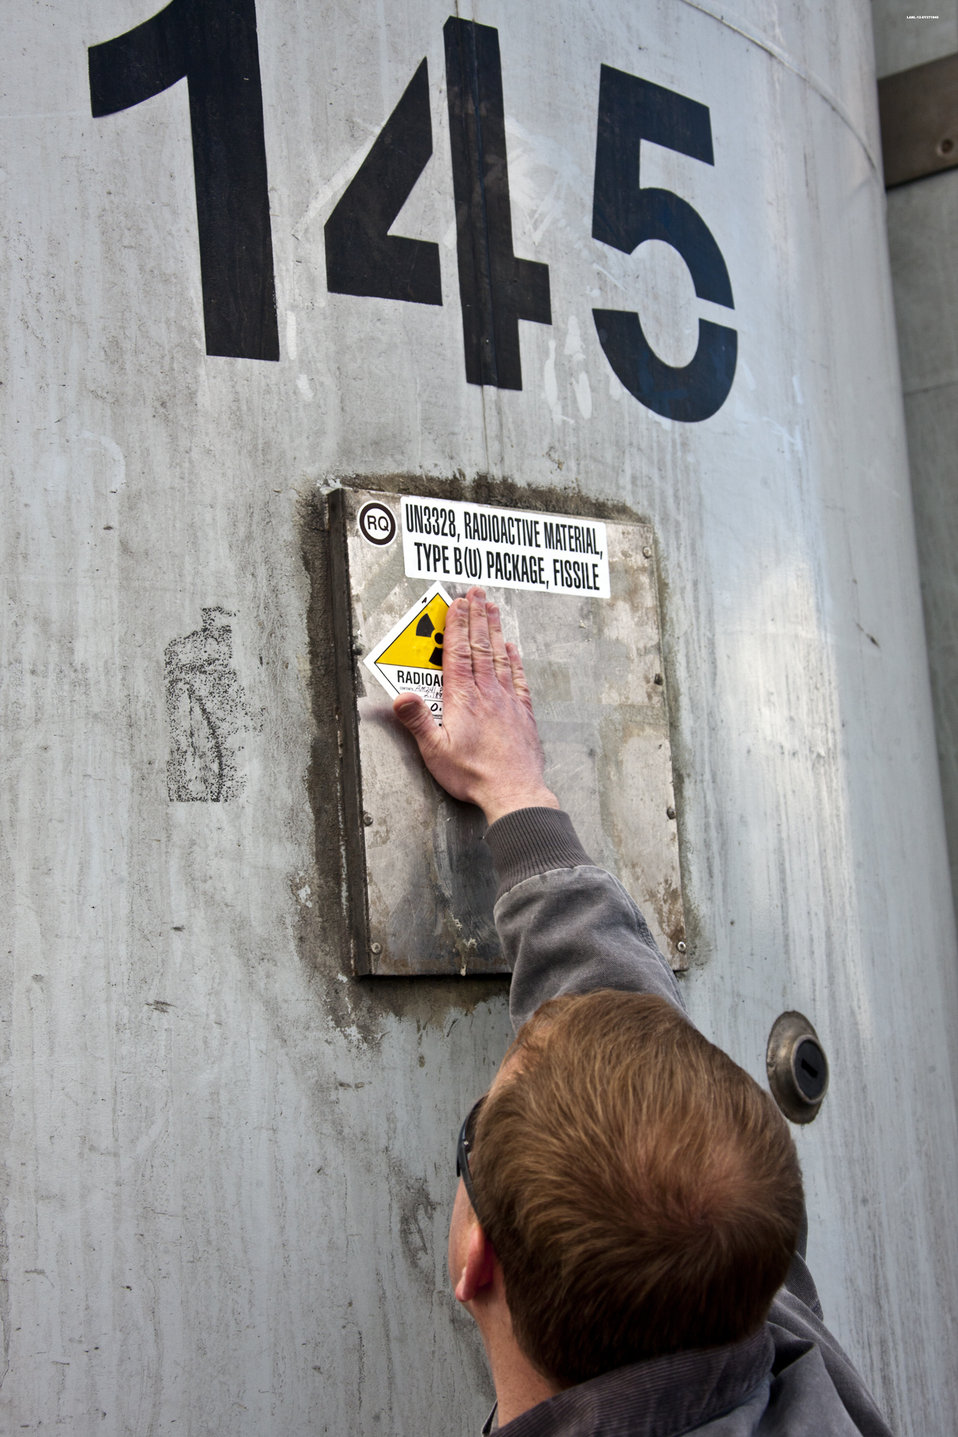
LANL’s TRU Waste Program Exceeds Planned Shipping Goal

LANL’s TRU Waste Program exceeded its planned removal of transuranic waste from Area G in April 2012.

The effort to accelerate removal of transuranic waste stored above ground at Area G was spurred by the Las Conchas Fire in 2011. After the fire, the Department of Energy and the State of New Mexico forged a framework agreement that calls for the removal of 3,706 cubic meters of waste stored above ground at Area G by June 30, 2014.